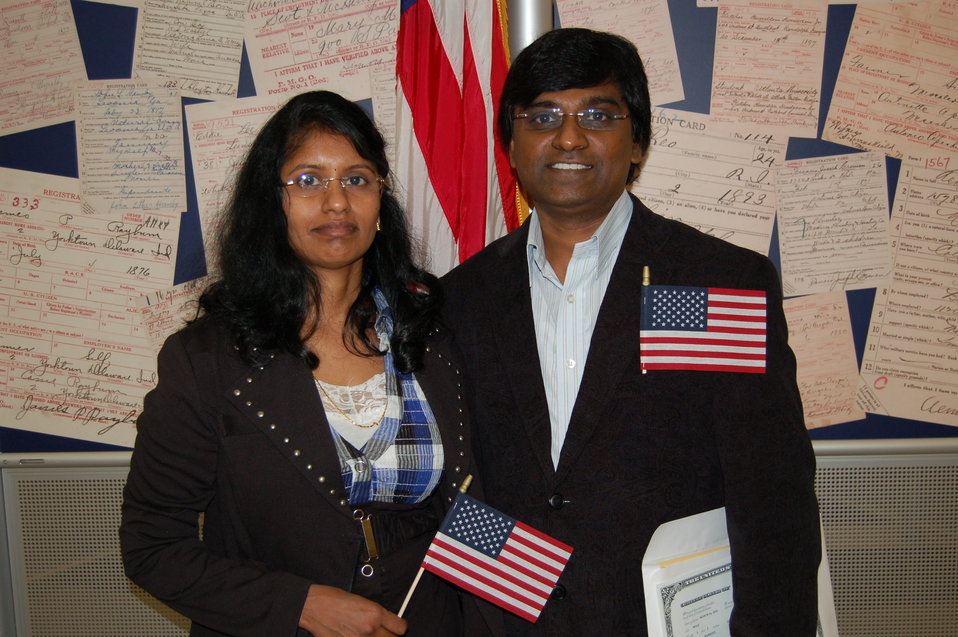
New Citizens